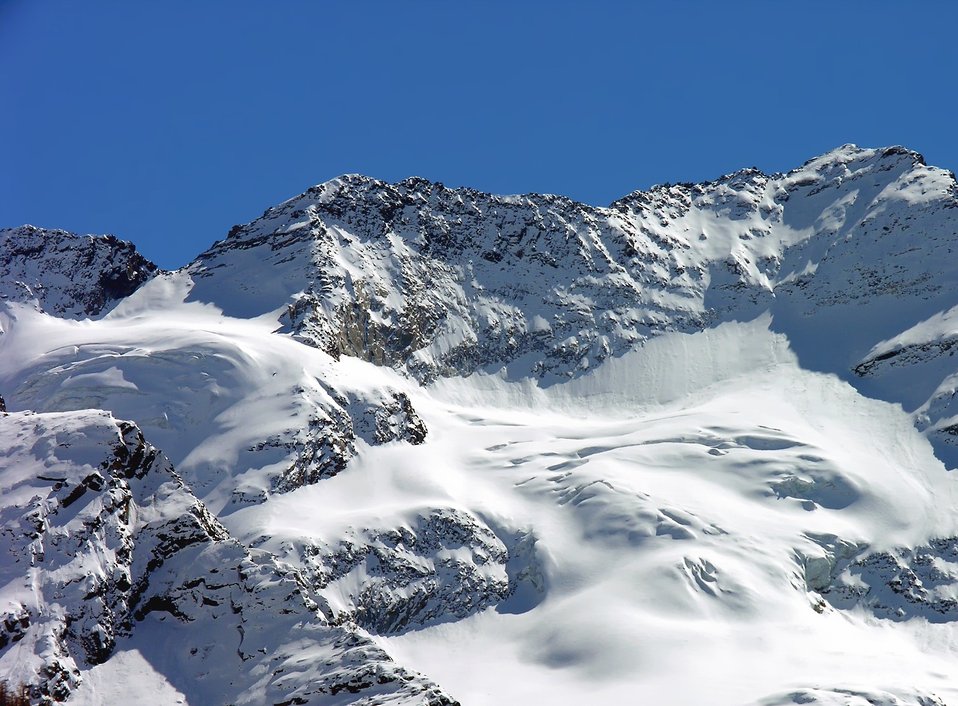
05984 Monti la Punta delle Sengie Cogne 06-04-2006.jpg - Alpi Graie - Italy